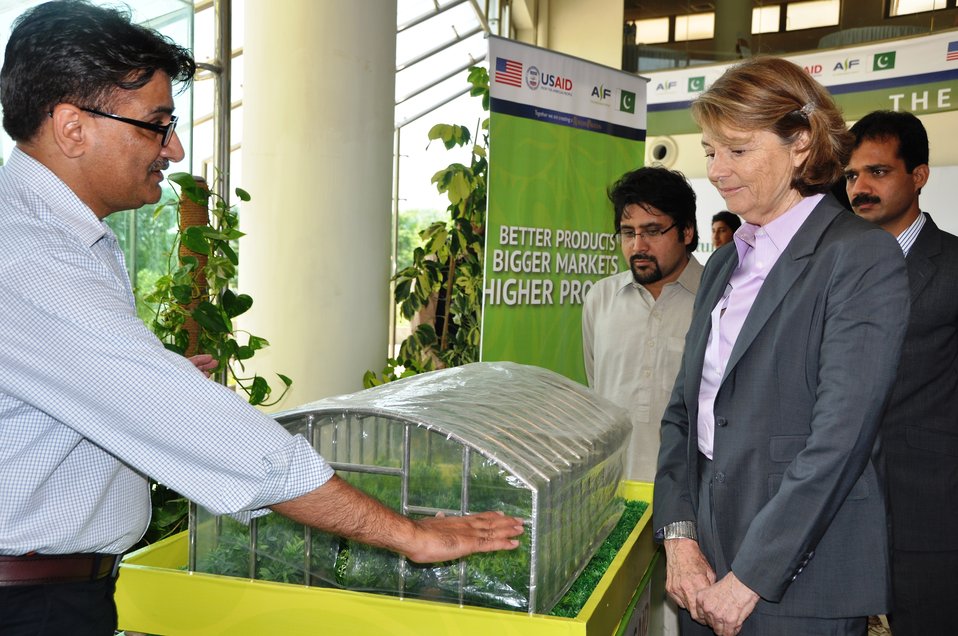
Pakistan Vegetable Fair 2014 (organized by USAID’s Agribusiness Project)

Acting Mission Director for USAID, Pakistan, Nancy Estes while being briefed about high tunnels and modern farming practices.